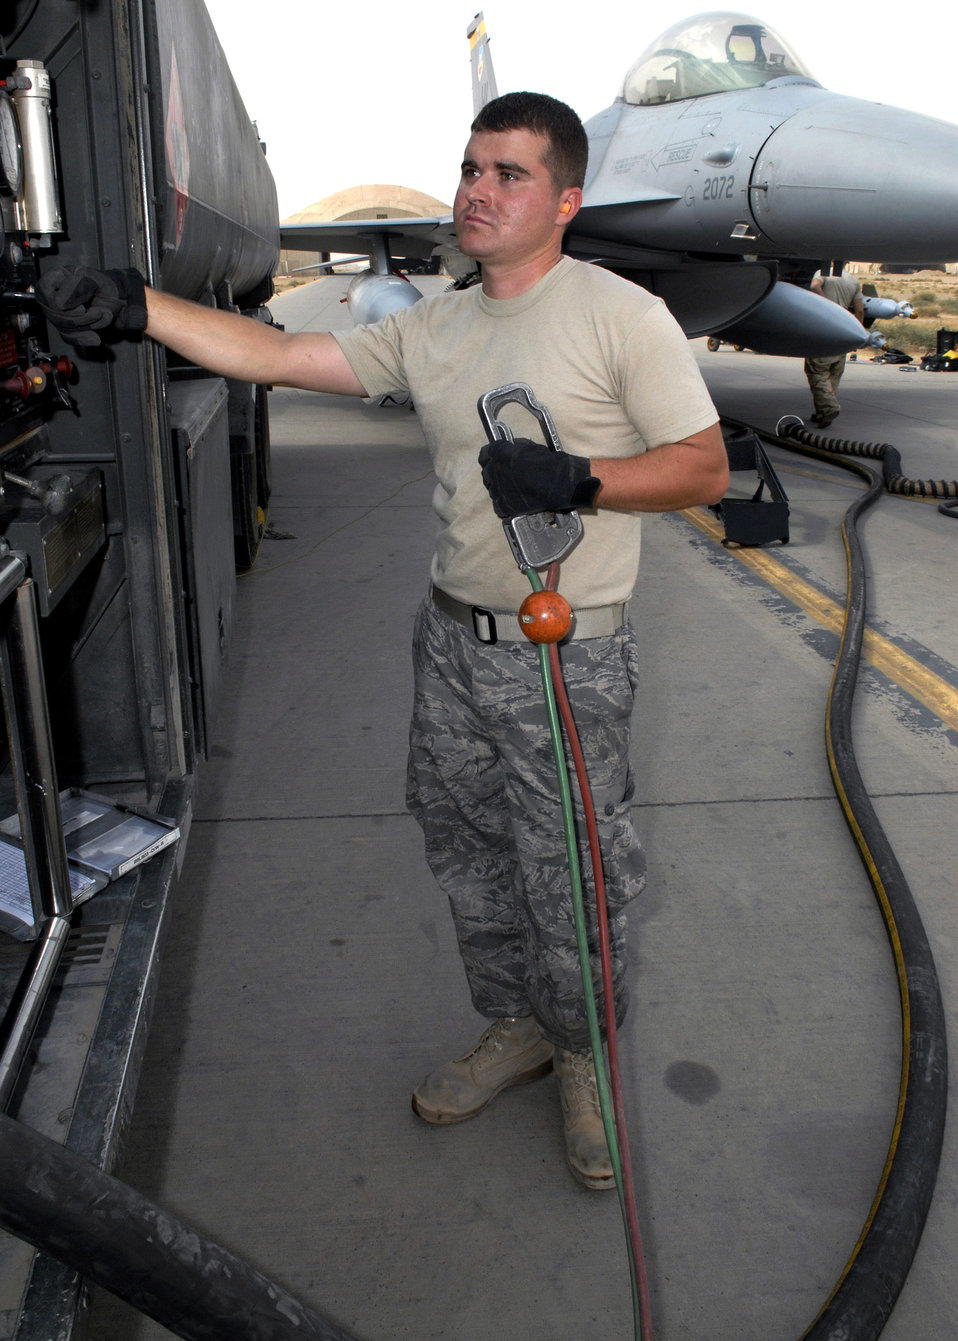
Fuel gauge

Senior Airman Joshua Maag monitors how much fuel is being pumped into an F-16 Fighting Falcon Oct. 17 at Balad Air Base, Iraq. The 332nd Expeditionary Logistics Readiness Squadron provides fuel for all aircraft and generators here. Airman Magg is asigned to the 332nd ELRS and is deployed from the 314th Logistics Readiness Squadron at Little Rock Air Force Base, Ark.